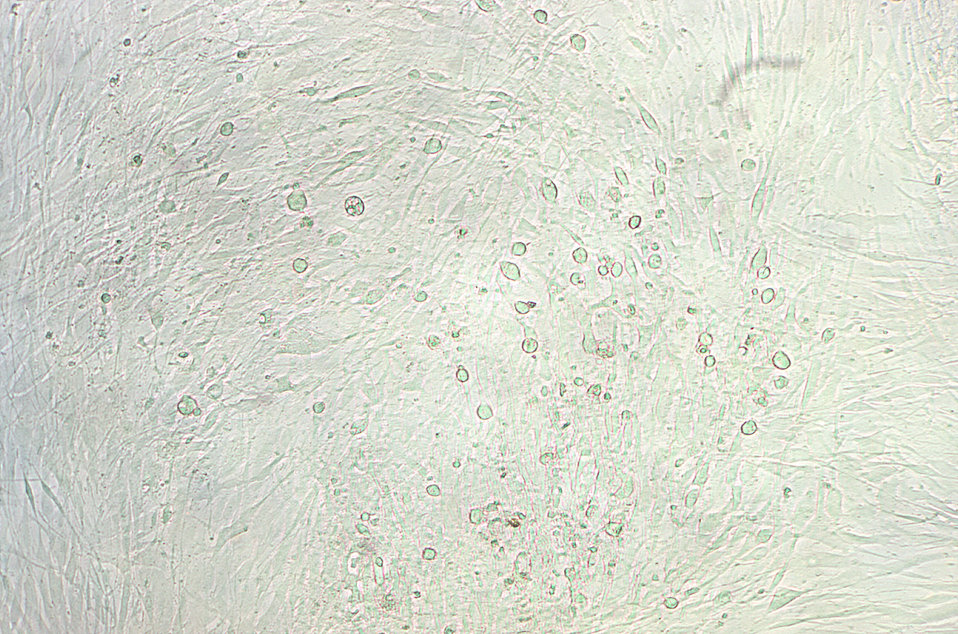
Magnified 100X, this photomicrograph revealed some of the cytoarchitectural morphology found in a section of normal newborn human foreskin tissue, which had been extracted from a fibroblast tissue culture. However, unlike PHIL 11003, which featured a depiction of a normal human foreskin fibroblast culture, this culture had been infected with the varicella zoster virus.